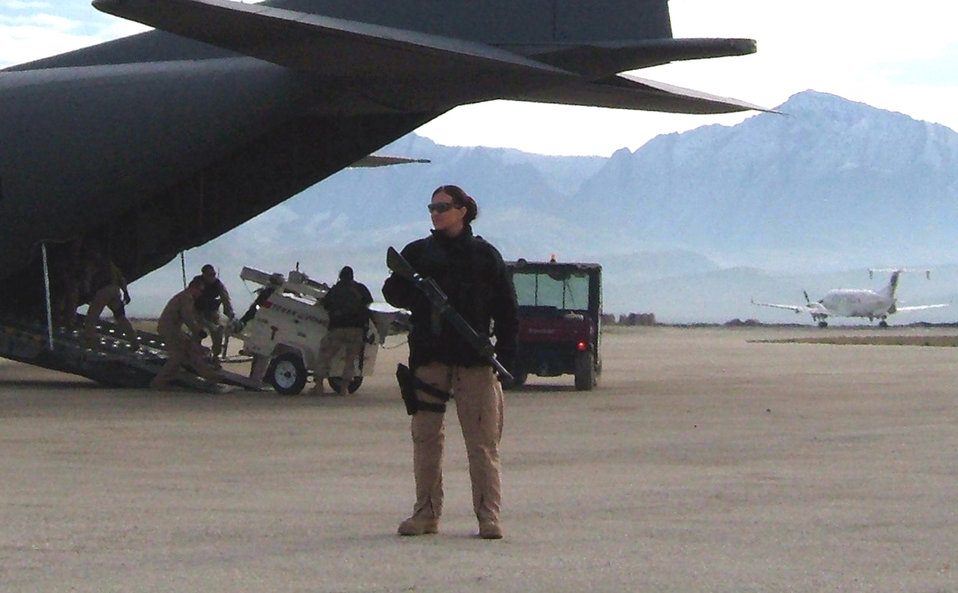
Security forces provide fly-away protection

AFGHANISTAN -- Senior Airman Desery Jenkins stands guard in front of a C-130 Hercules at a forward-operating base in Afghanistan. Security forces troops fly along to provide protection for the aircrew and cargo they are carrying. Airman Jenkins is a security forces journeyman with the 416th Expeditionary Mission Support Squadron security forces flight and is deployed from Hill Air Force Base, Utah.